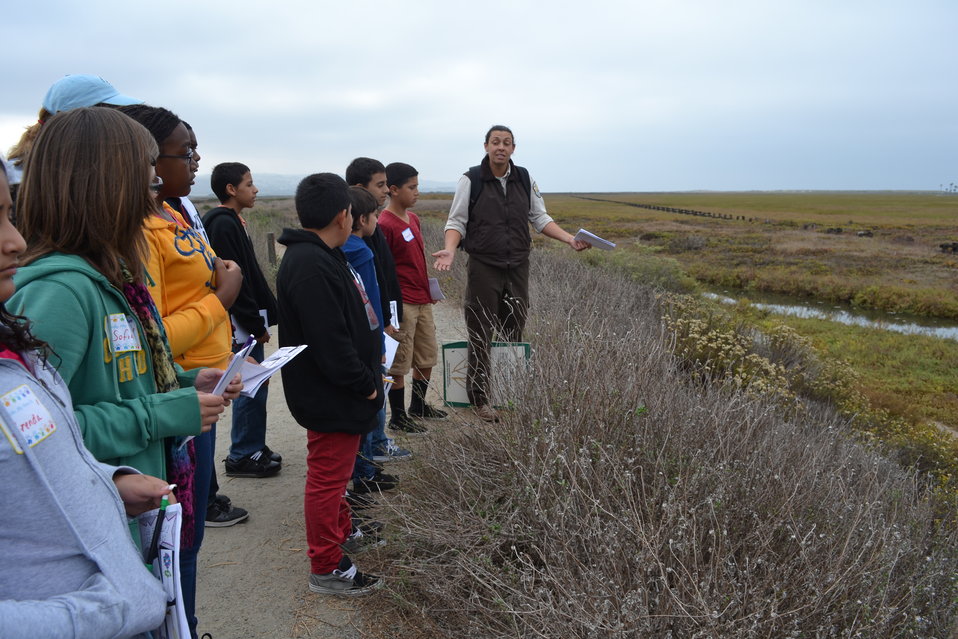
'Where are we, guys?'

FWS Environmental Education Specialist gives an orientation on the Tijuana Estuary, and discusses why plants are so specialized there